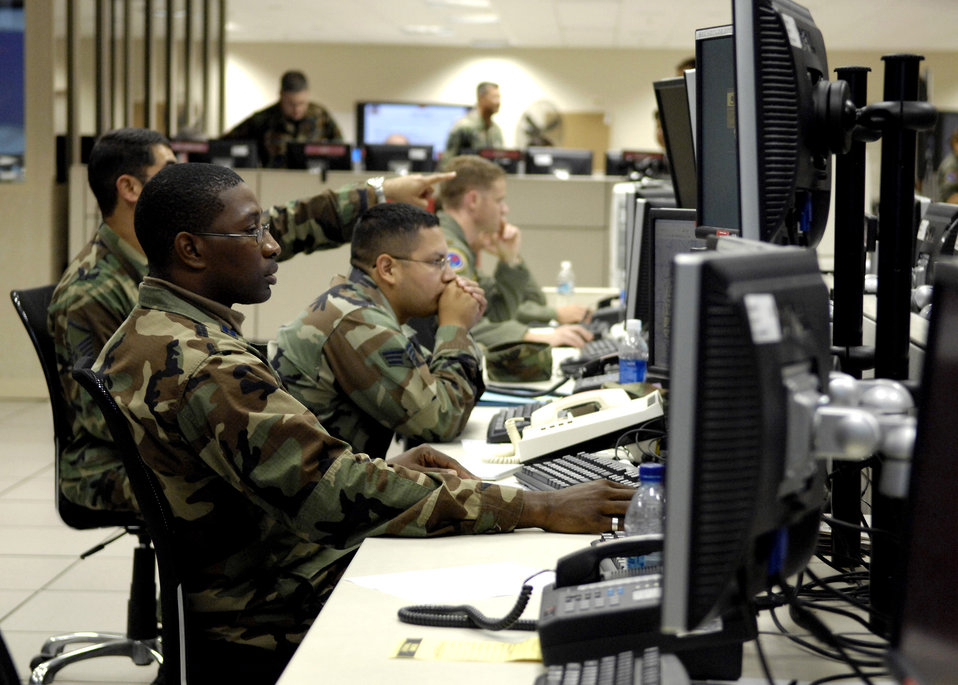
Ops center commands sky during Exercise Valiant Shield

Members of the personnel recovery coordination cell discuss a downed pilot recovery mission during Exercise Valiant Shield Aug. 7 in the Air and Space Operation Center at Hickam Air Force Base, Hawaii. The Airmen are from the 613th Air Operations Center. Valiant Shield is a week-long exercise that tests the military's ability to rapidly consolidate joint forces in response to regional contingencies, involves approximately 22,000 troops, 30 ships and some 275 aircraft.